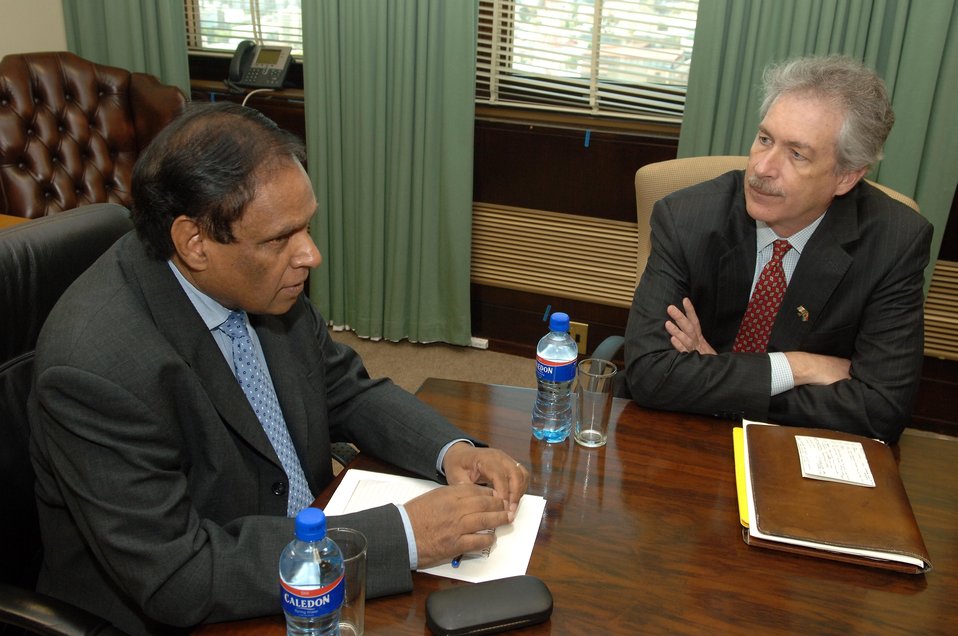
South African Deputy Foreign Minister Ebrahim Ebrahim Meets With U.S. Under Secretary William J. Burns

South African Deputy Foreign Minister Ebrahim Ebrahim meets with U.S. Under Secretary for Political Affairs William J. Burns in Cape Town, South Africa, April 23, 2010.